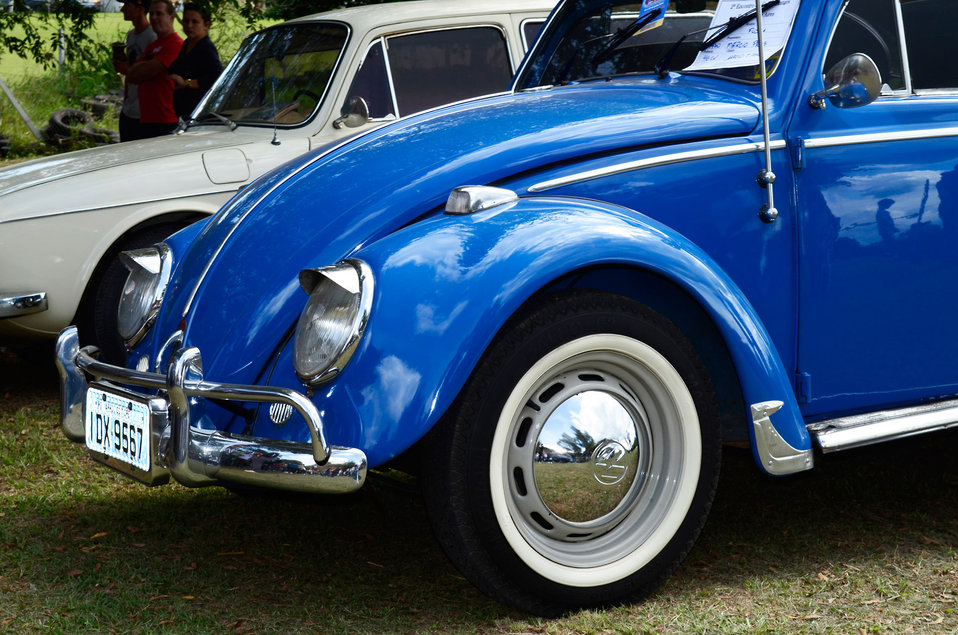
Blue beetle

Antique blue beetle.